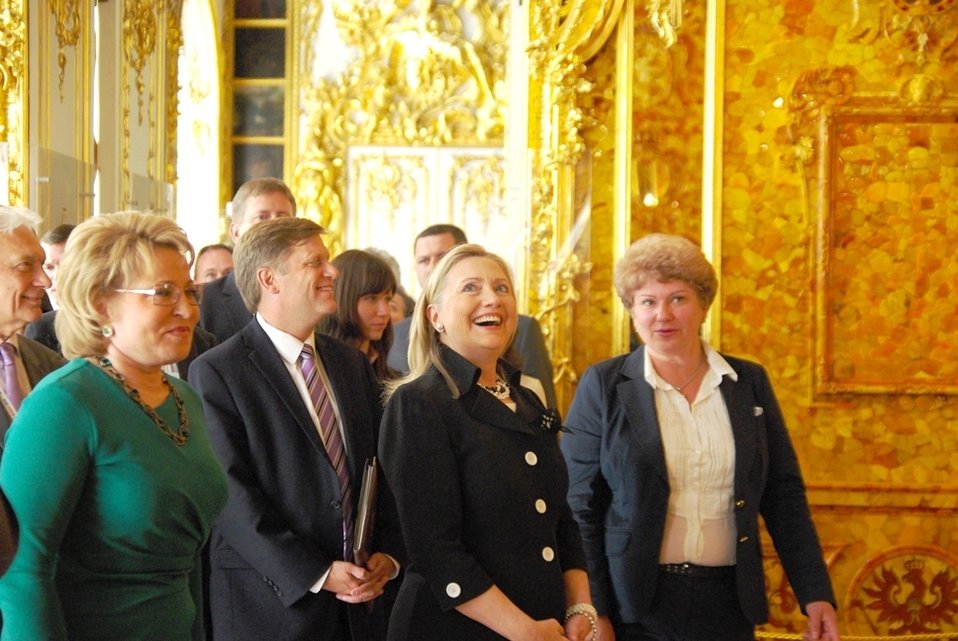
Secretary Clinton, Ambassador McFaul With Chairman Matveyenko

U.S. Secretary of State Hillary Rodham Clinton and U.S. Ambassador to Russia Michael McFaul walk with Chairman of the Federation Council of the Russian Federation Valentina Matviyenko at the Catherine Palace in St. Petersburg, Russia, on June 29, 2012.